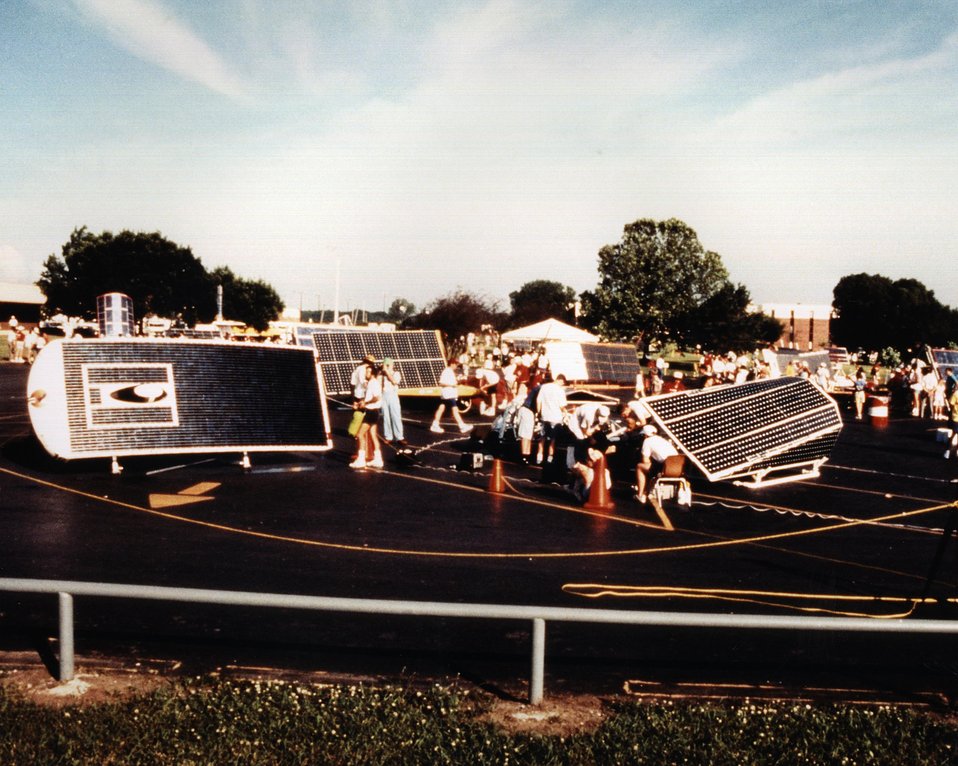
AFTER EACH DAY OF RACING THE SOLAR CARS RECHARGE THEIR BATTERIES FROM THE SUN UNTIL NIGHTFALL AND AGAIN IN THE MORNING UNTIL THE RACE BEGAN AT 9AM.